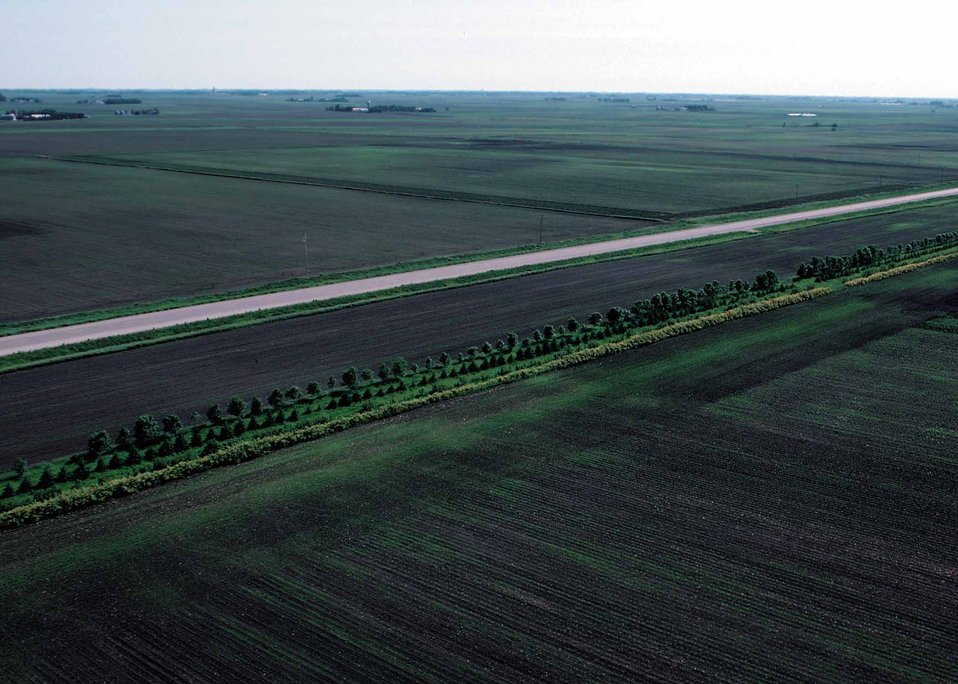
A living snowfence in northwest Iowa slows soil erosion by wind and keeps the highway clear of snow.